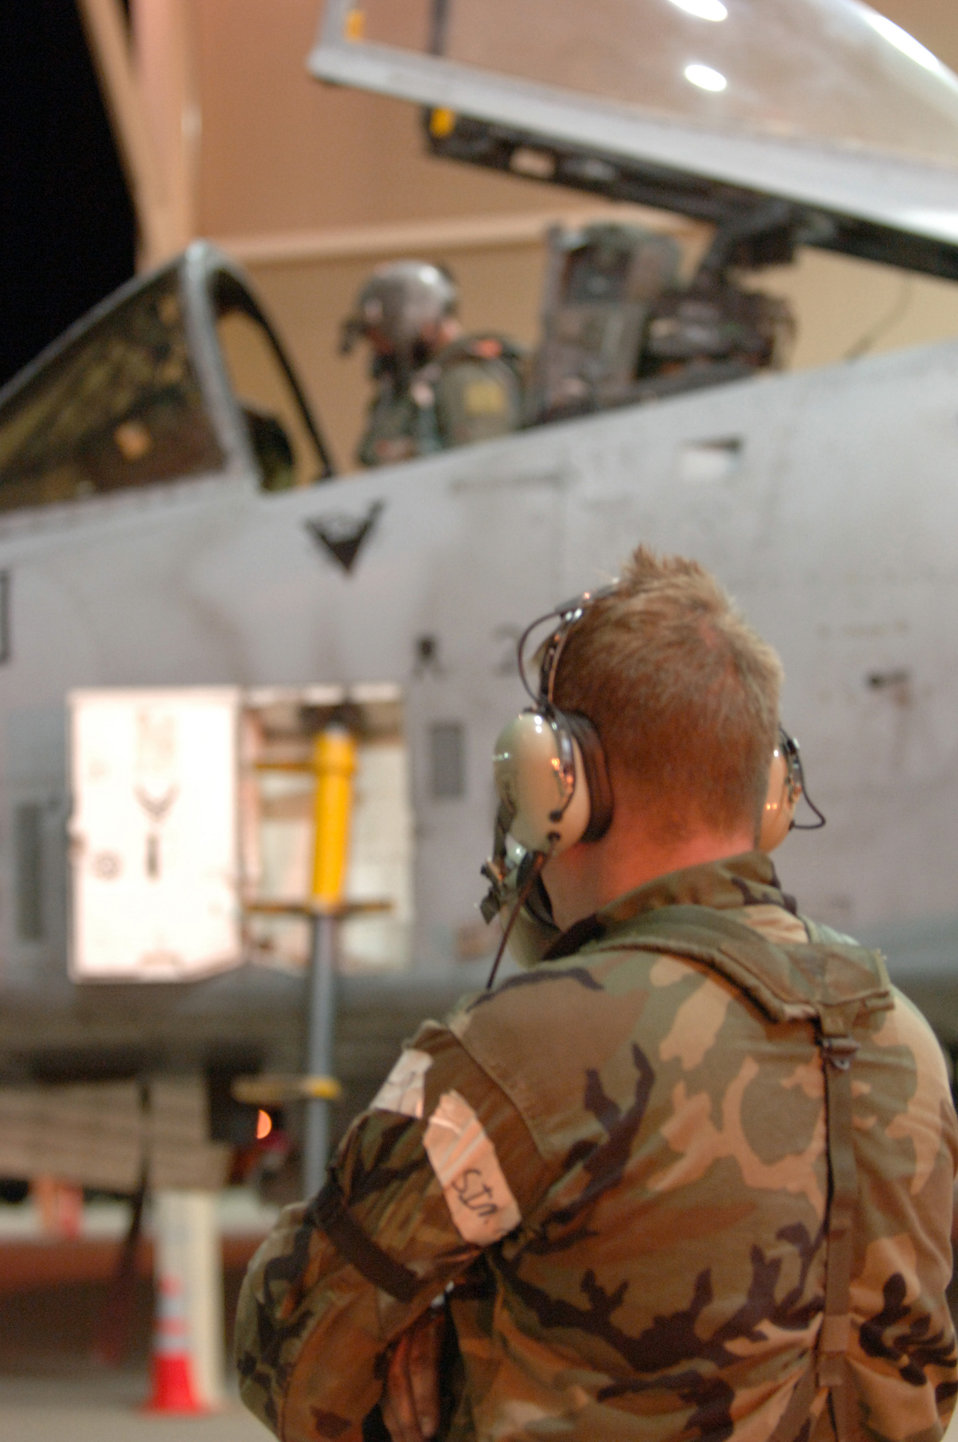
Exercise Bushwacker 06-02

Airman 1st Class Clayton Callison conducts a pre-flight checklist with an A-10 Thunderbolt II pilot on Monday, April 3, 2006, at Davis-Monthan Air Force Base, Ariz. Airman Callison is a crew chief with the 355th Aircraft Maintenance Squadron.